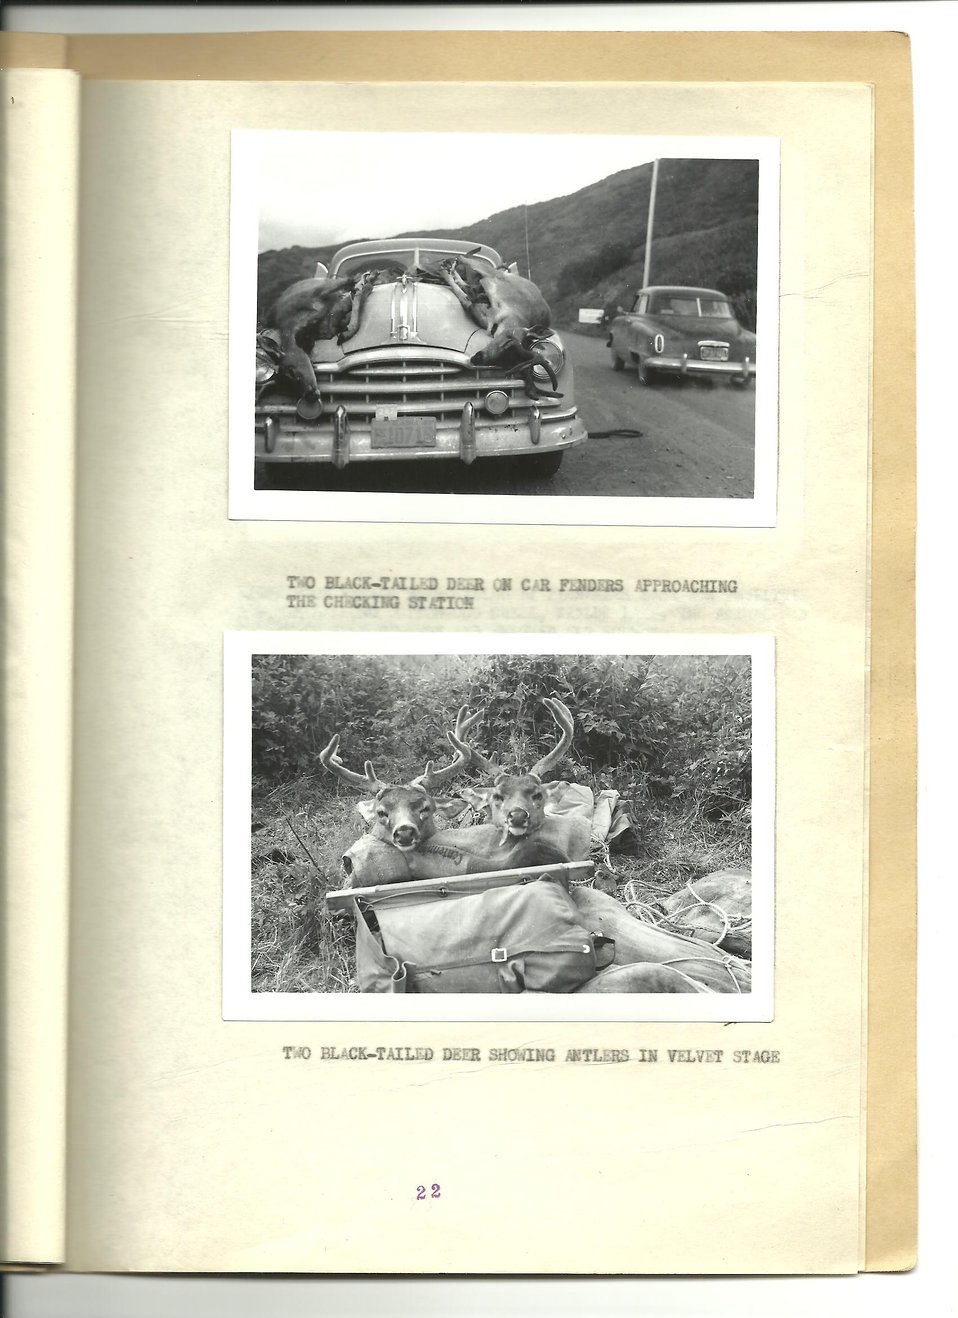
(1953) Deer Hunts

Credit: USFWS

Source and Contact: Kodiak National Wildlife Refuge